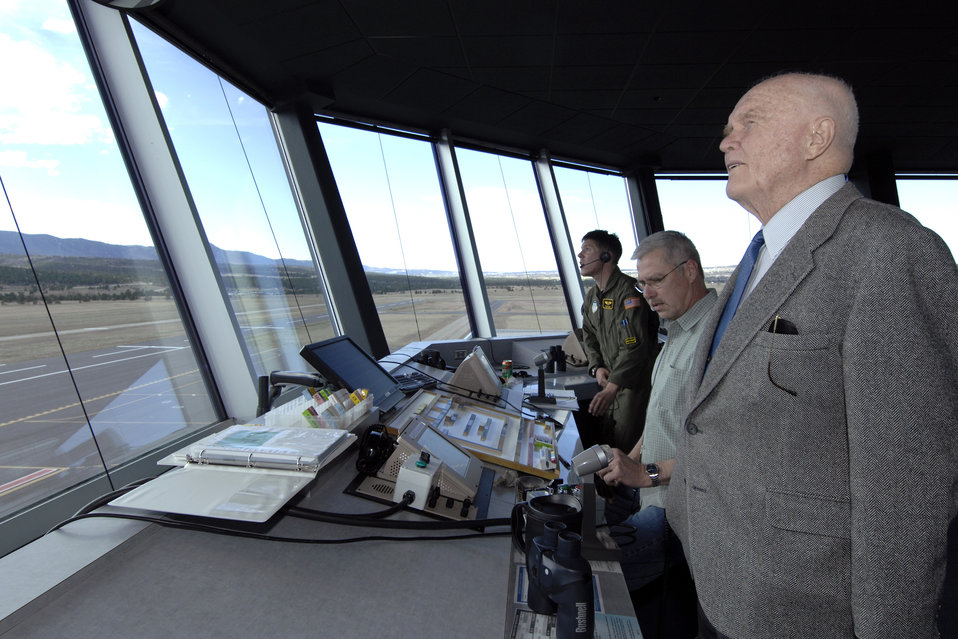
Academy honors Senator Glenn

Sen. John Glenn views airfield operations from the U.S Air Force Academy's control tower April 21 during a visit to the school. The senator was there to be honored as the recipient of the 2008 Thomas D. White National Defense Award on the Academys terrazzo in front of the cadet wing.